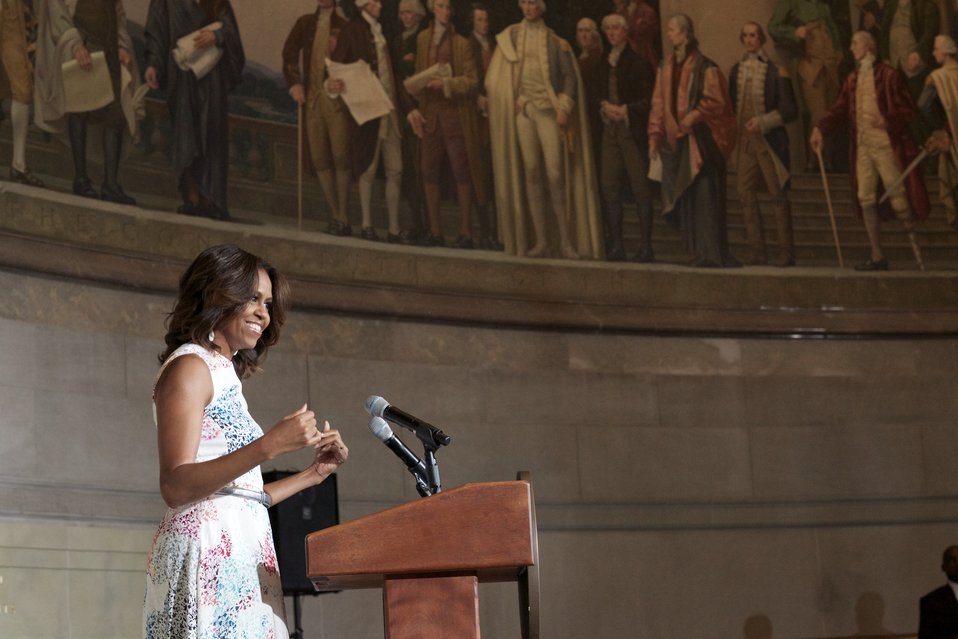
Naturalization Ceremony with Michelle Obama